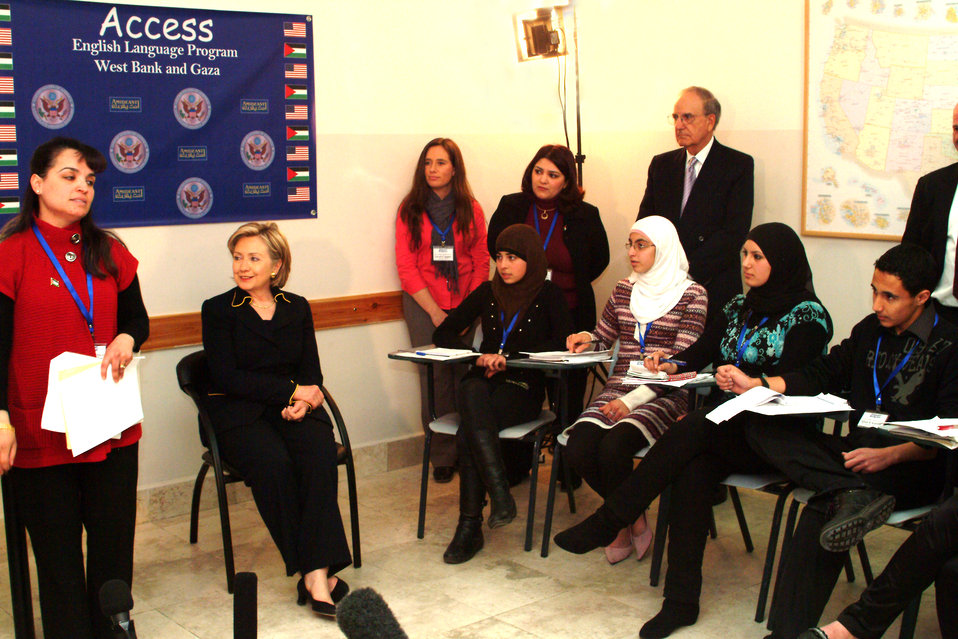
Secretary Clinton Attends Amideast Event

Secretary Clinton at an Amideast event in Ramallah March 4, 2009.